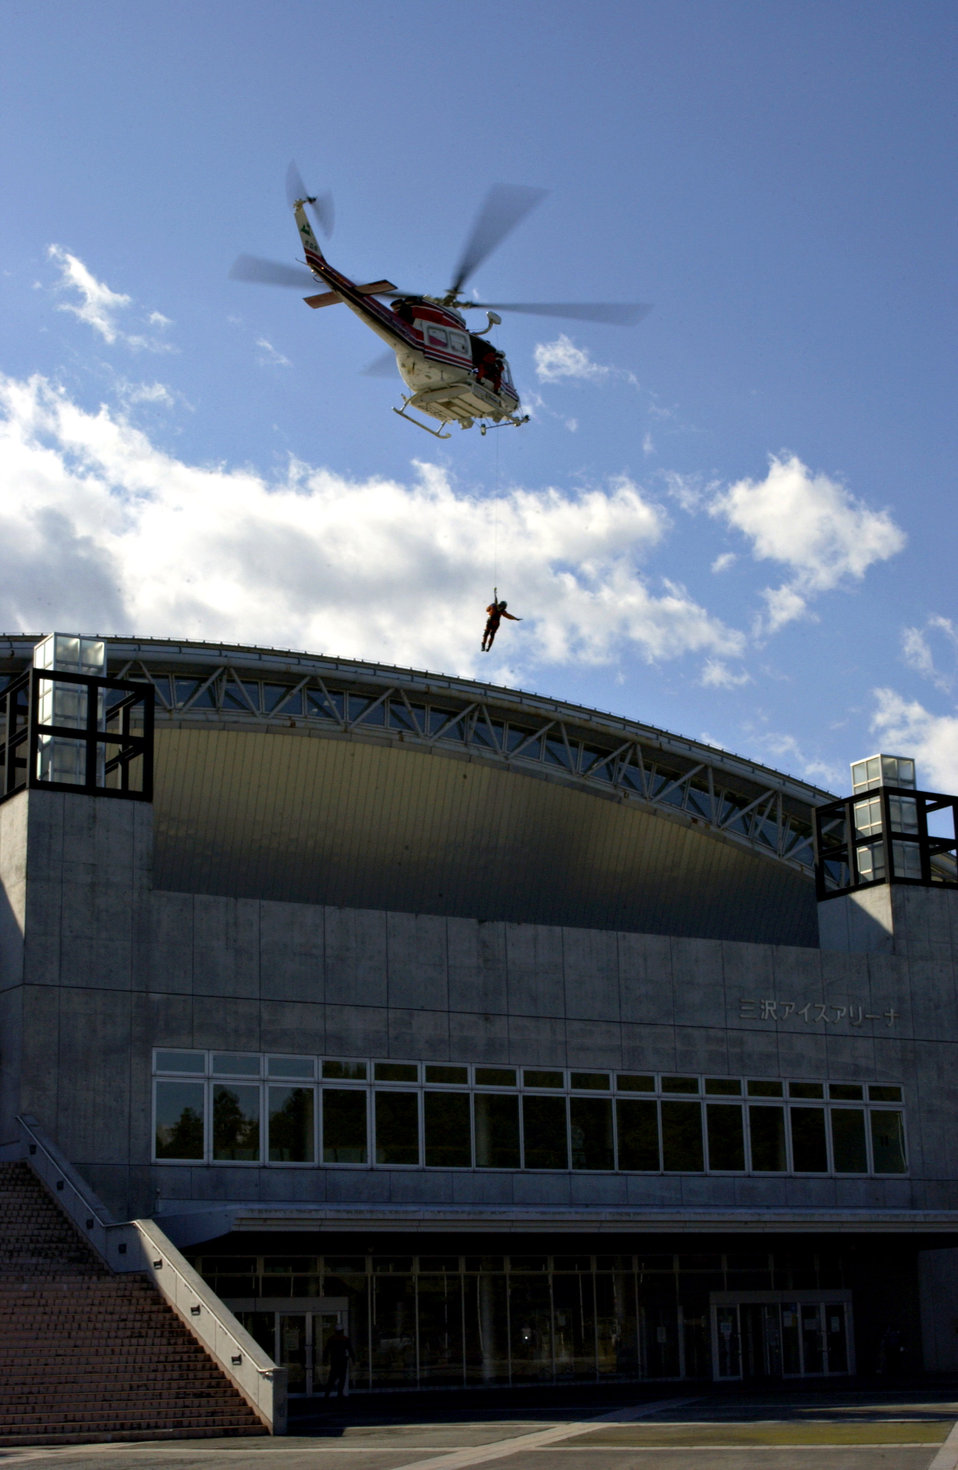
Misawa partners with city for disaster exercise

A helicopter from the Aomori Prefecture Disaster Preparedness Air Center lowers a rescue worker to retrieve a victim from the roof of the Misawa Ice Arena as part of the Misawa City Disaster Preparation Exercise Oct. 14 in Japan. The exercise involved personnel from Misawa City as well as Misawa Air Base.